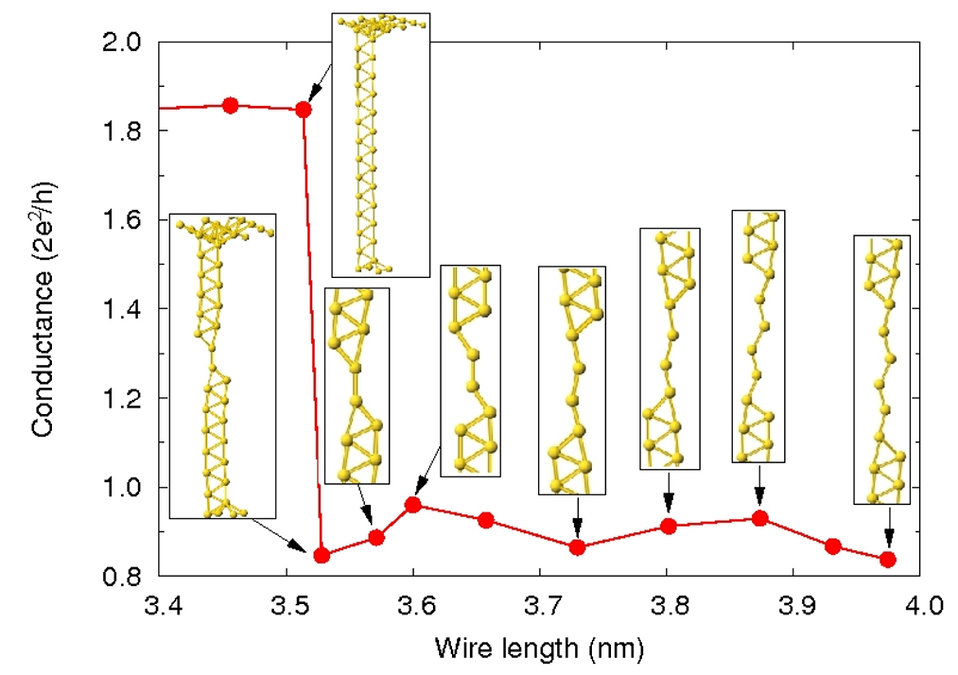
Atomic-Scale; Instrument

A quantum-mechanics-based simulation demonstrates how a new NIST instrument can delicately pull a chain of atoms apart. The chart records quantum jumps in conductivity as a gold contact is stretched 0.6 nanometer. The junction transitions from a 2-dimensional structure to a one-dimensional single-atom chain, with a corresponding drop in conductivity. Following the last point, at a wire length of 3.97 nm, the chain broke.